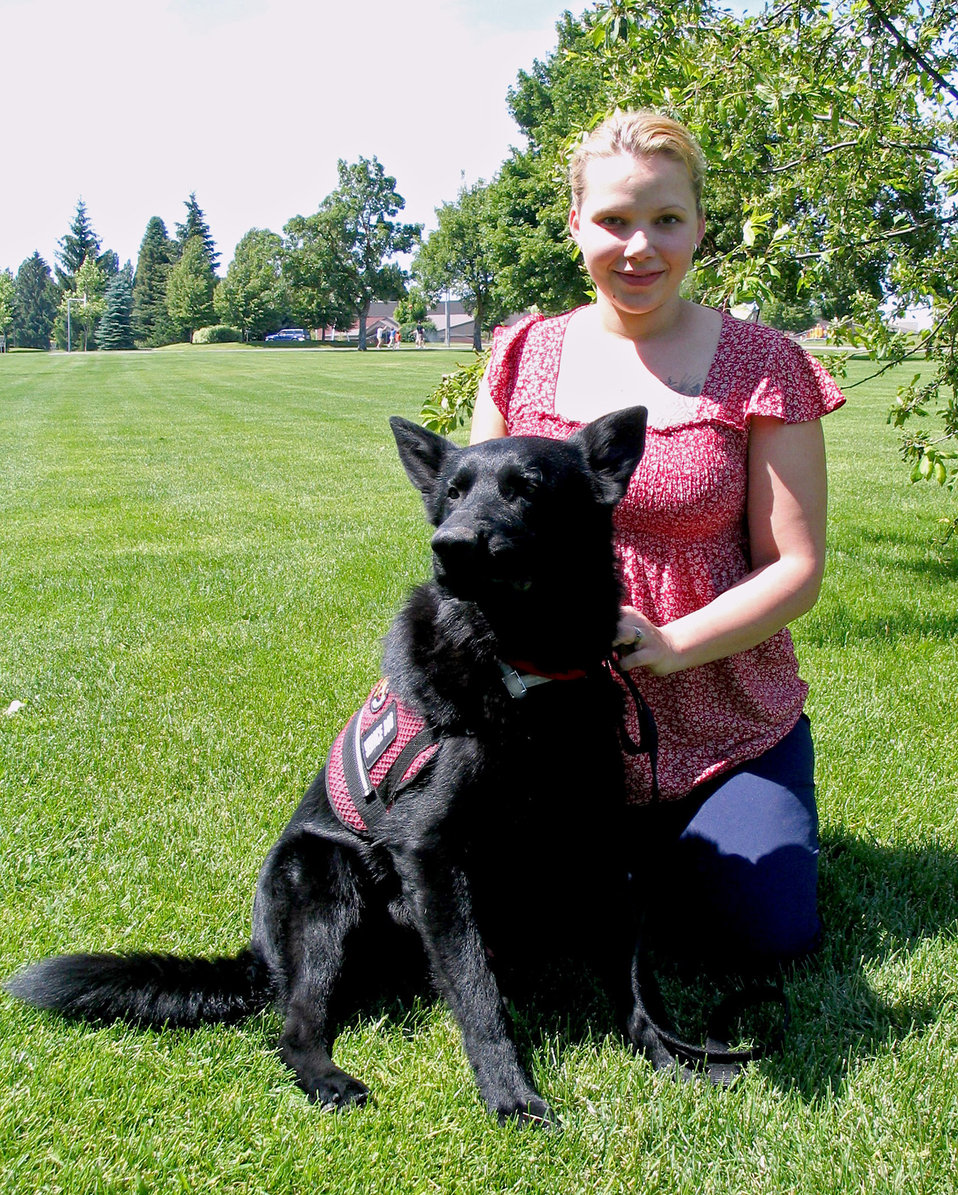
Service dog aids Fairchild family member

Kimberly Hawks kneels with her medical alert dog, Zeuss, an 18-month-old German shepherd June 22 at Fairchild Air Force Base, Wash. Ms. Hawks obtained Zeuss from a breeder in Seattle after detailed research about medical dogs and their services. Zeuss comes from an accomplished canine family; his parents are both champion show dogs, and his brother is a drug detection dog in Arizona.